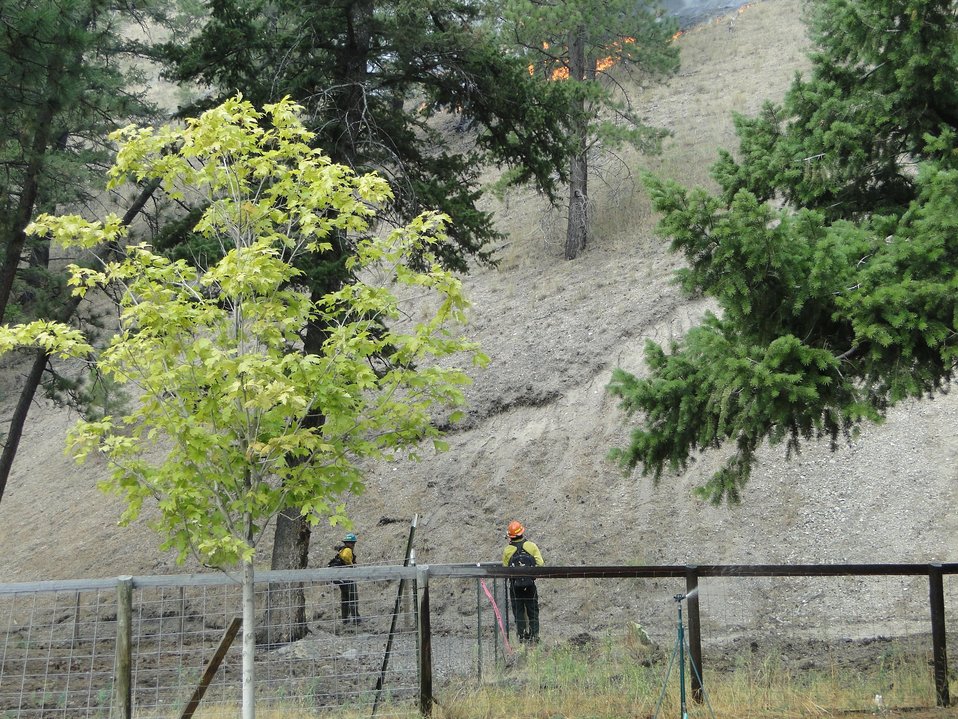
Firefighters stand ready as the fire backs down a slope towards a private residence in order to stop any rolling, burning debris that may come down the slope at the Lolo Creek Fire. The Lolo Creek Fire in the Lolo National Forest near Lolo, MT began on Aug. 18, 2013 by lightning has consumed approximately 10,892 acres and is 47% contained.